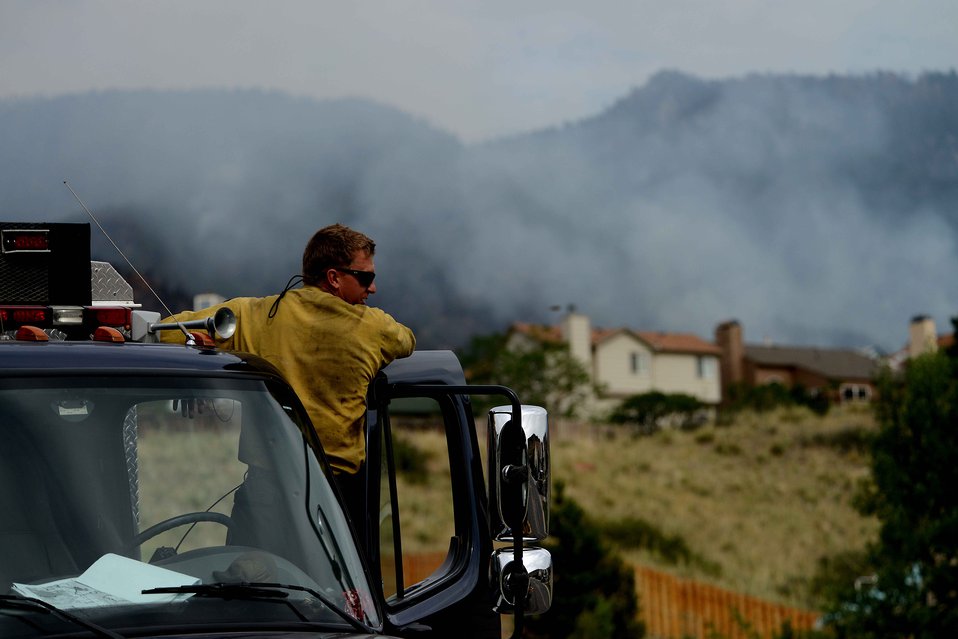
Taking a look

Richard Strange looks out at his worksite for the day in the Mount Saint Francois area of Colorado Springs, Colo., June 28, 2012. Strange and the rest of the firefighters o the Vandenberg Air Force Base, Calif., Hot Shots helped battle several fires in Waldo Canyon.